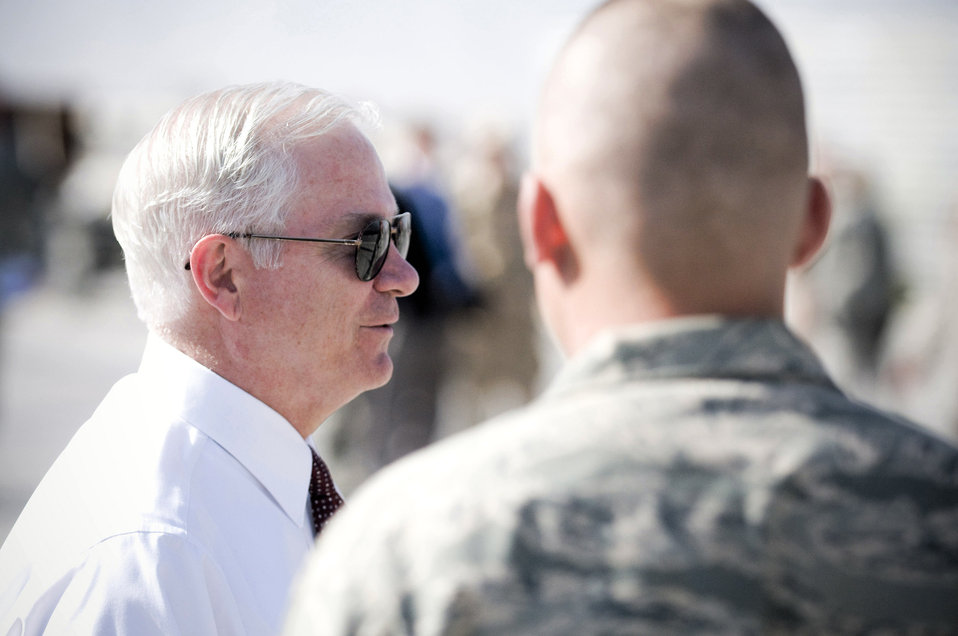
Secretary of Defense visits Bagram

Secretary of Defense Robert M. Gates visits with Airmen Sept. 17 at Bagram Airfield, Afghanistan. Secretary Gates met primarily with the Airmen who fly and maintain the A-10 Thunderbolt II, which provides close-air support for coalition forces fighting the war on terrorism.